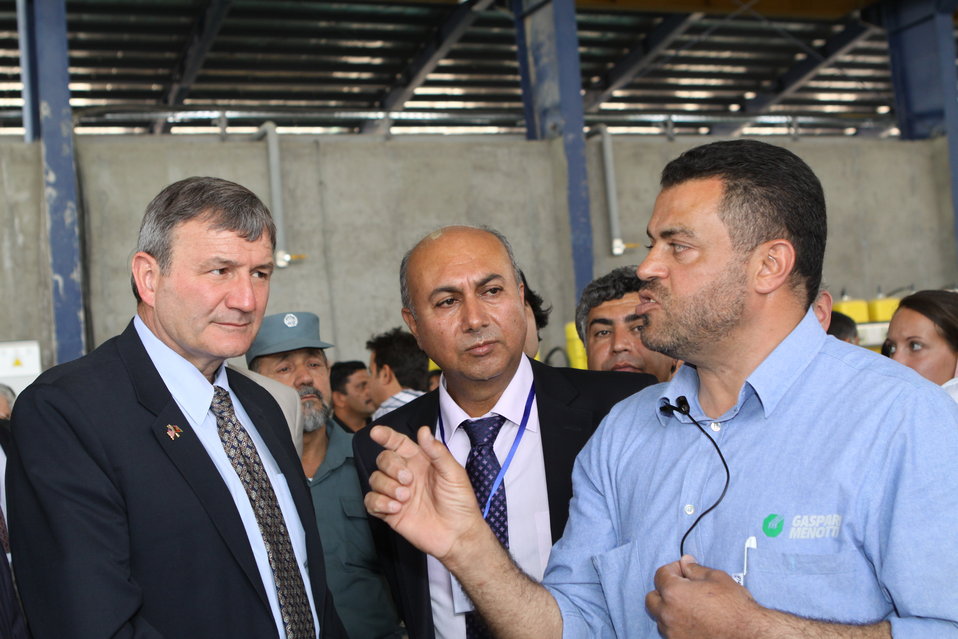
100525 Hirat Marble Conference 388